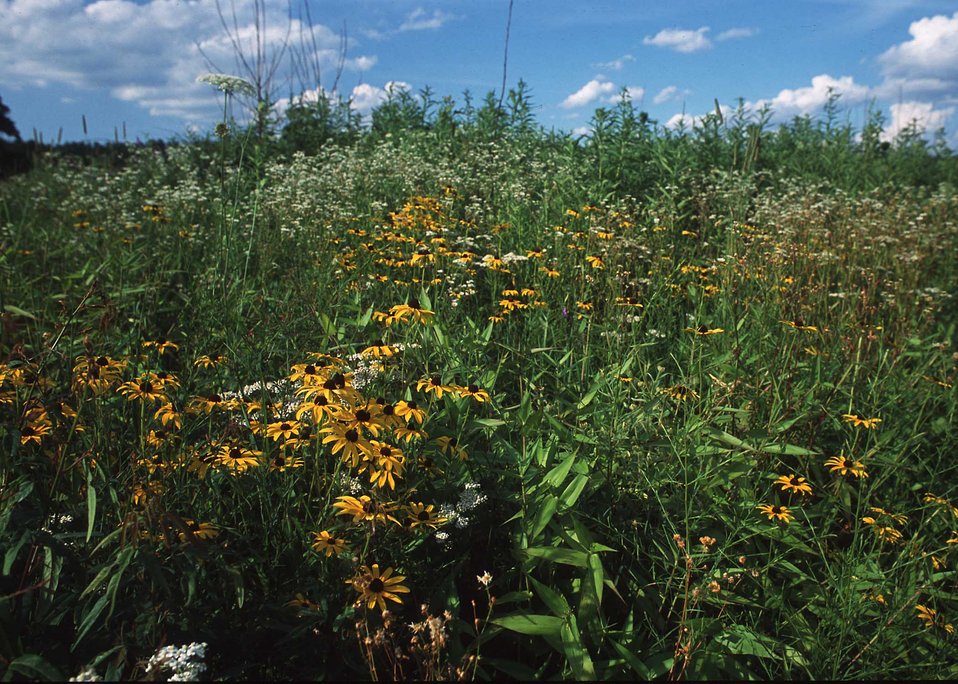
Early successional habitat restoration project in Hartford County.